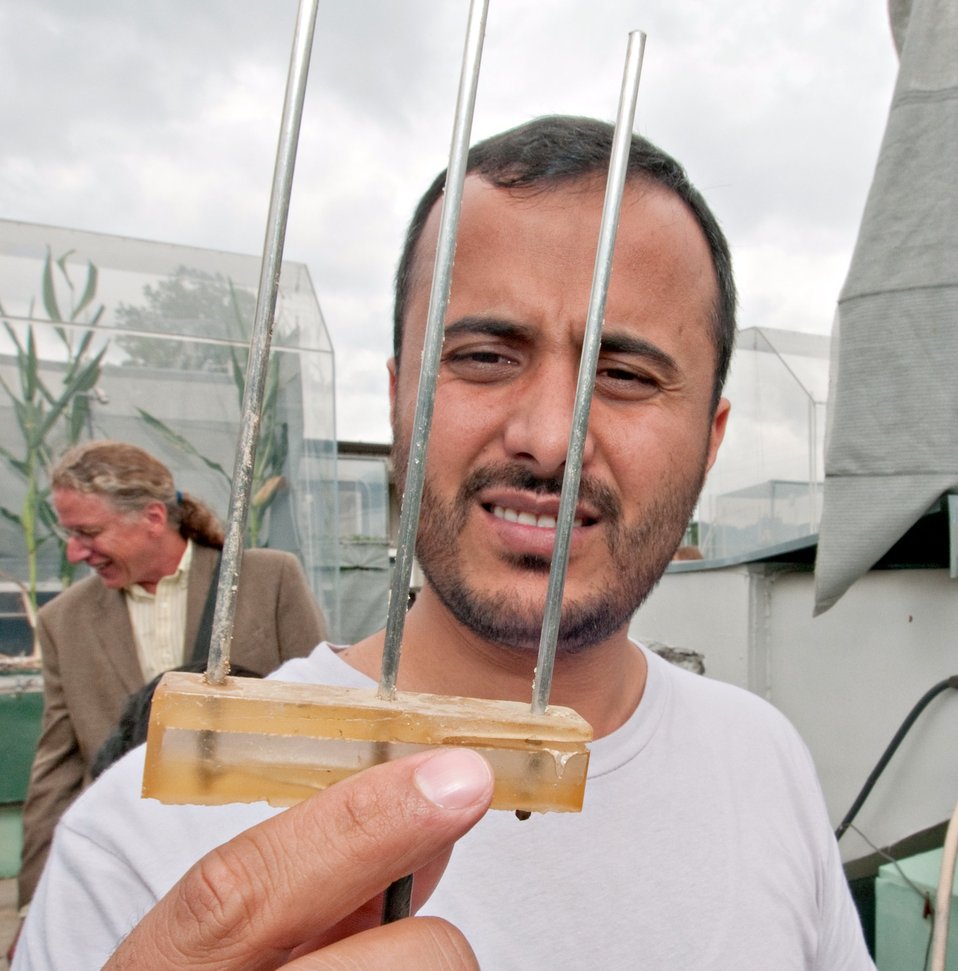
One of the 12 Borlaug Fellows from Afghanistan’s Ministry of Agriculture, Irrigation and Livestock (MAIL) takes a close look at a moisture probe used at the United States Department of Agriculture, Agriculture Research Service, Global Climate Change Lab, and in a Soil Plant Atmosphere Research (SPAR) unit, in Beltsville, MD, on Wednesday, September 21, 2011. SPAR units provide precise control of the major environmental variables influencing crop growth including temperature, humidity, and atmospheric carbon dioxide concentration. The SPAR units are fully automated to measure crop canopy gas exchange including photosynthesis, respiration, transpiration and water use efficiency.